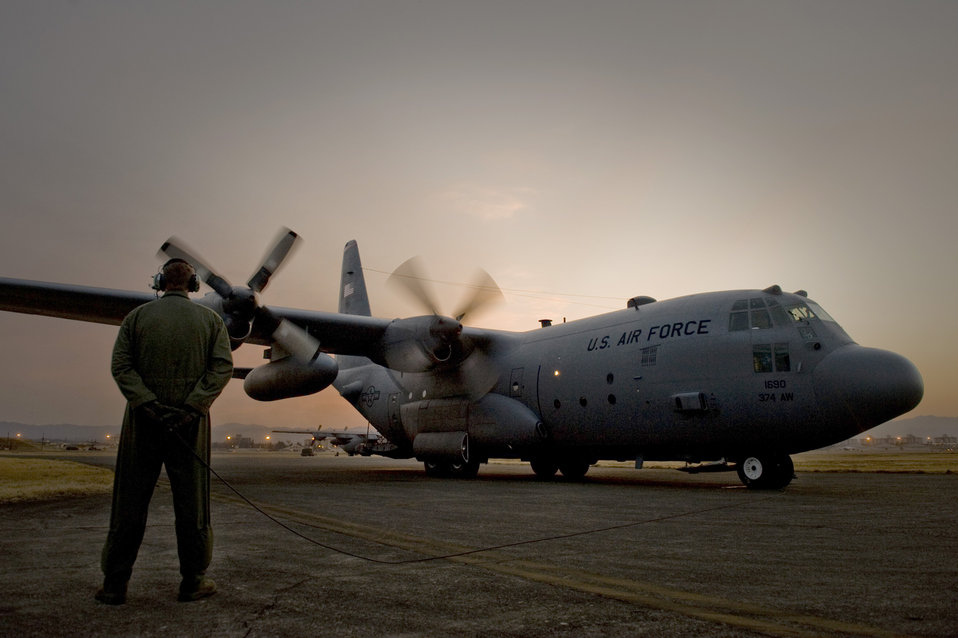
Medical supplies for Japan

Staff Sgt. Charles Kirchen watches as the engines are started on a C-130 Hercules at Yokota Air Base, Japan, before a mission March 19, 2011. Sergeant Kirchen is assigned to the 36th Airlift Squadron.